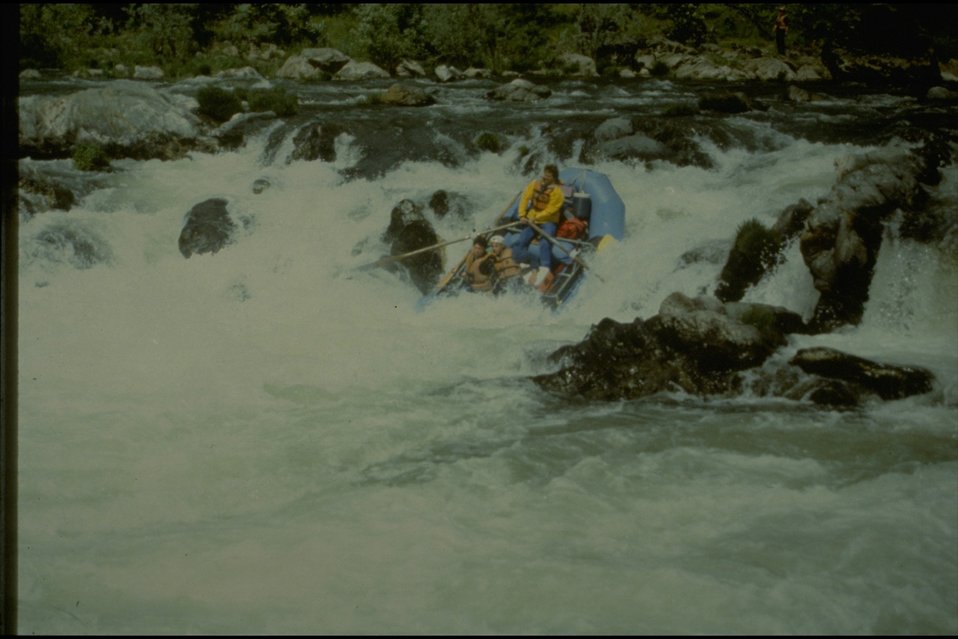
Rogue River - Rainie Falls, wild section. Raft entering main falls.